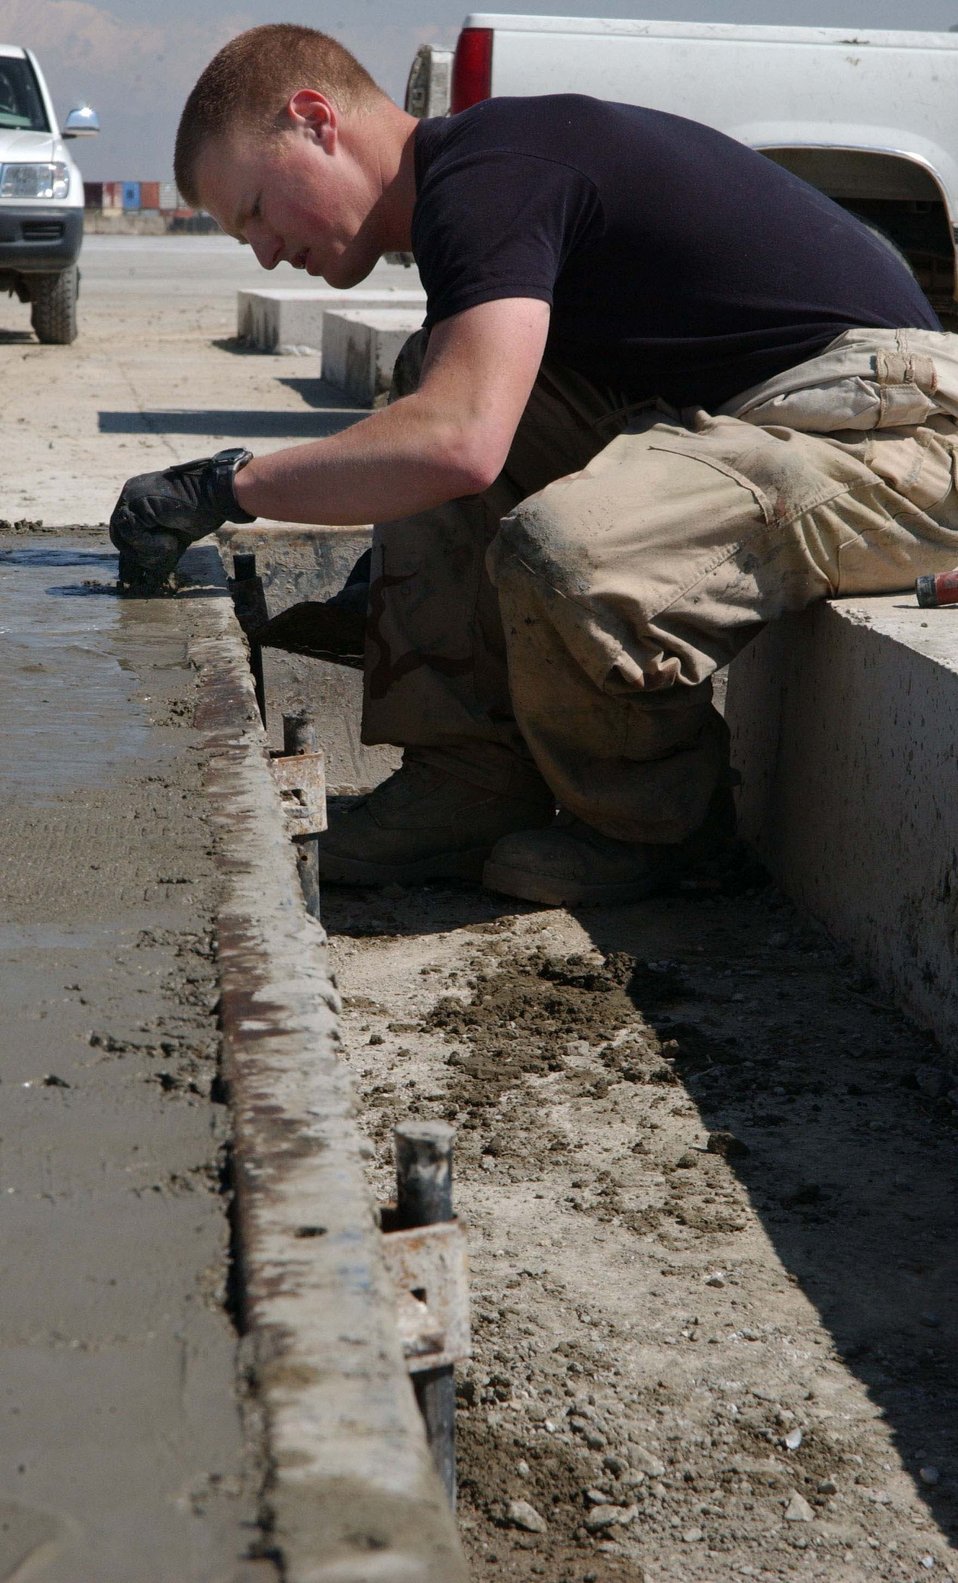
Civil engineers prepare to 'close the gaps' on Bagram's flightline

BAGRAM AIR BASE, Afghanistan -- Senior Airman Joel Parney finishes the concrete on one of the 28 precast runway replacement slabs that will be used to repair the 9,800-foot runway here. He is assigned to the 455th Expeditionary Civil Engineer Squadron.